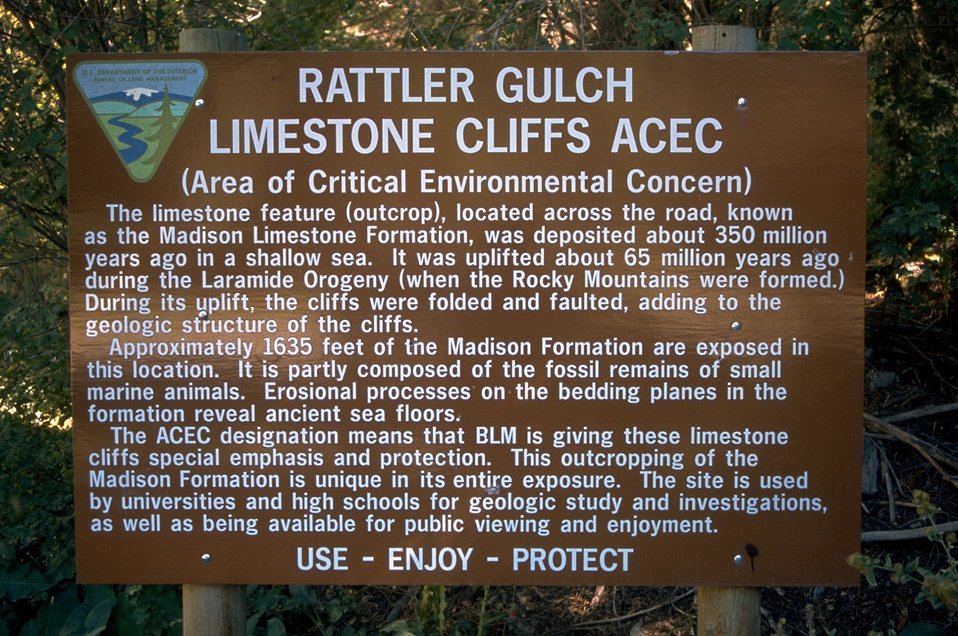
Rattler Gulch-Limestone Cliffs ACEC interpretive sign